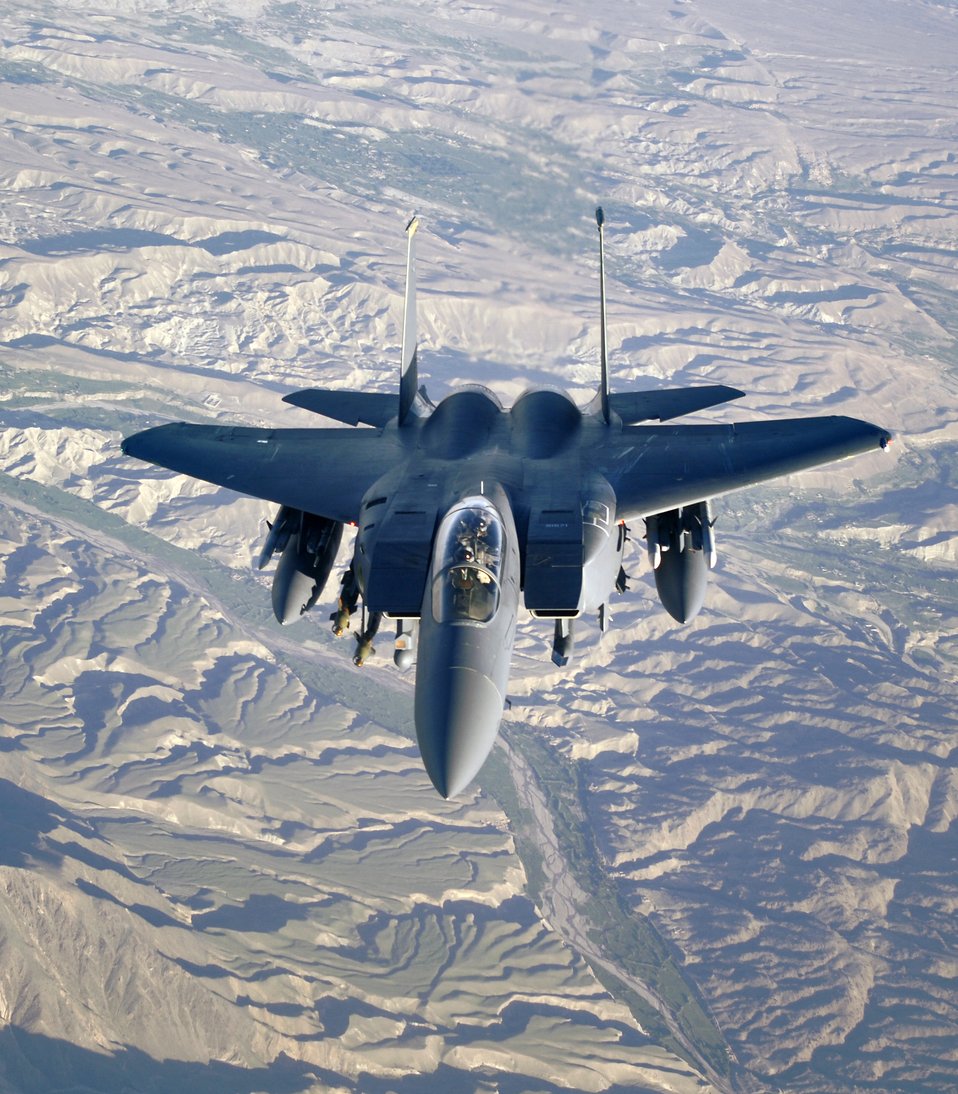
Operation Mountain Lion roars

An F-15E Strike Eagle soars over the mountains and high desert of Afghanistan in support of Operation Mountain Lion on Wednesday, April 12, 2006. The crew and fighter are deployed to the 336th Expeditionary Fighter Squadron in Southwest Asia from the 4th Fighter Wing at Seymour Johnson Air Force Base, N.C.